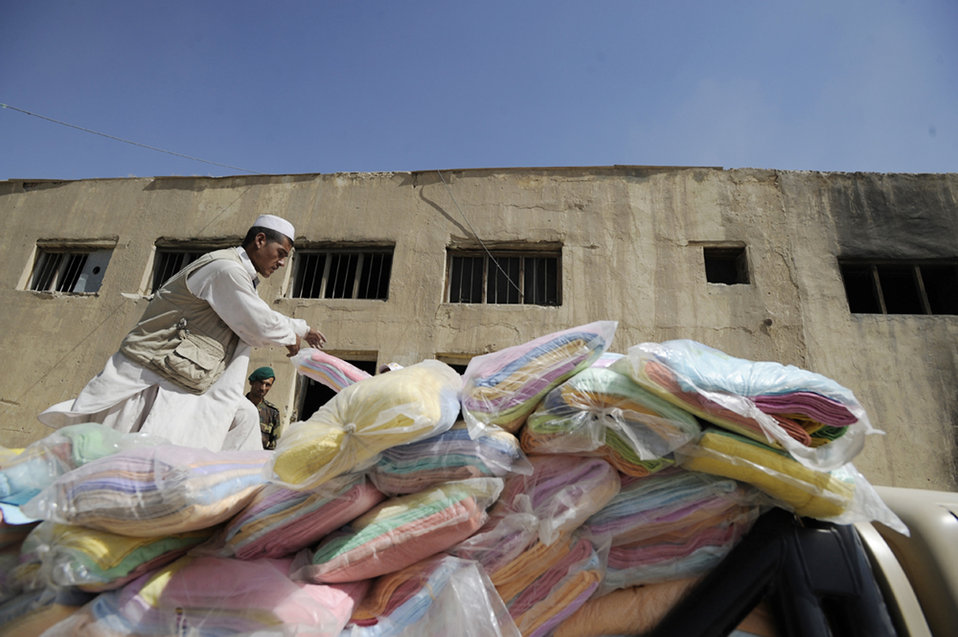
Airmen advise Afghan medical mission

Recruits for the Afghan national army load pillows into barracks of the Kabul Military Training Center, Afghanistan.